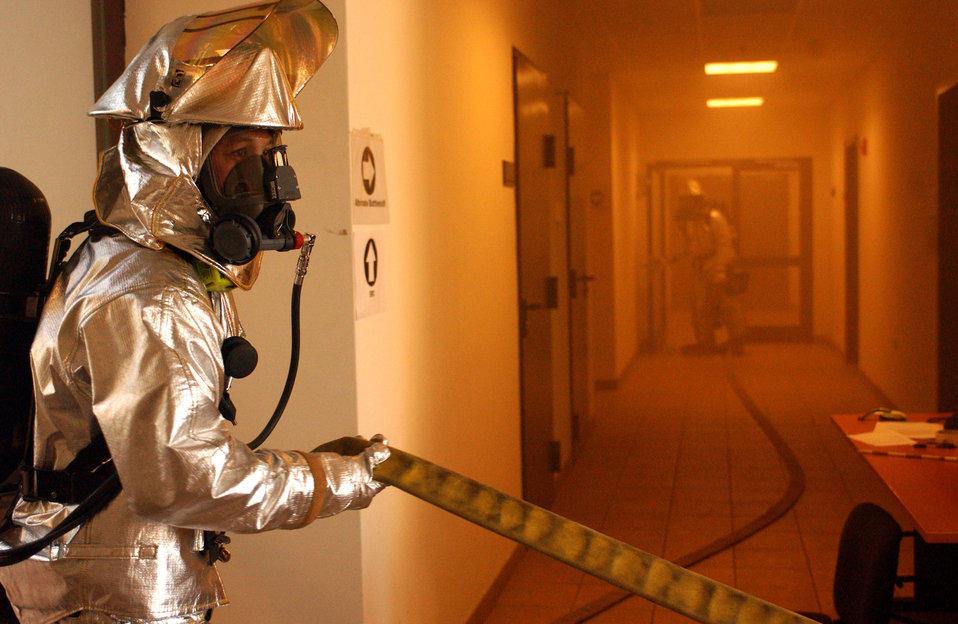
Exercise response

A firefighter brings a water hose into a building during a local Salty Nation exercise at Aviano Air Base, Italy, on Tuesday, June 6, 2006. The firefighter is with the 31st Fighter Wing here. The exercise runs through June 9.